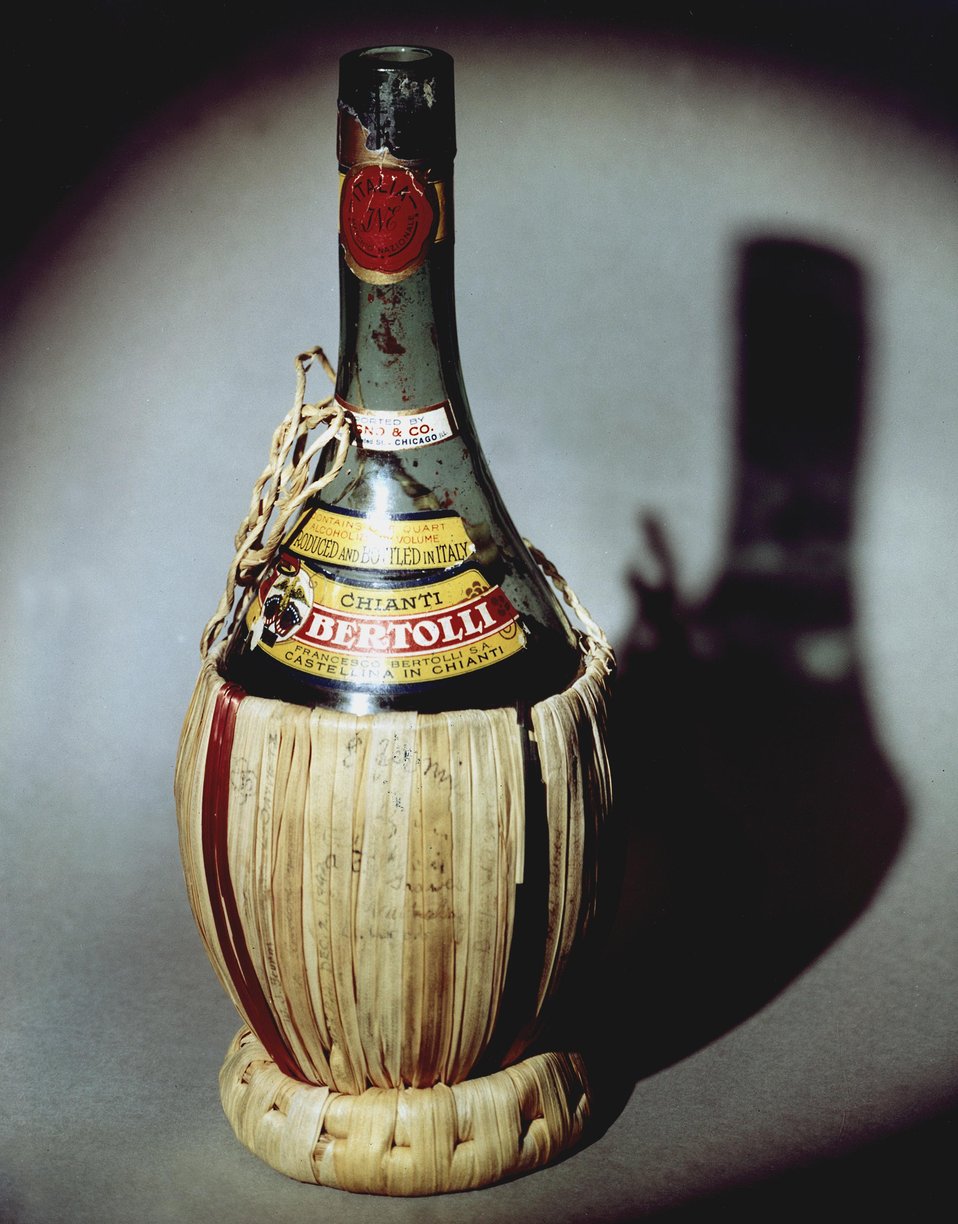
The Chianti bottle purchased by Eugene Wigner to help celebrate the first self-sustaining, controlled chain reaction.